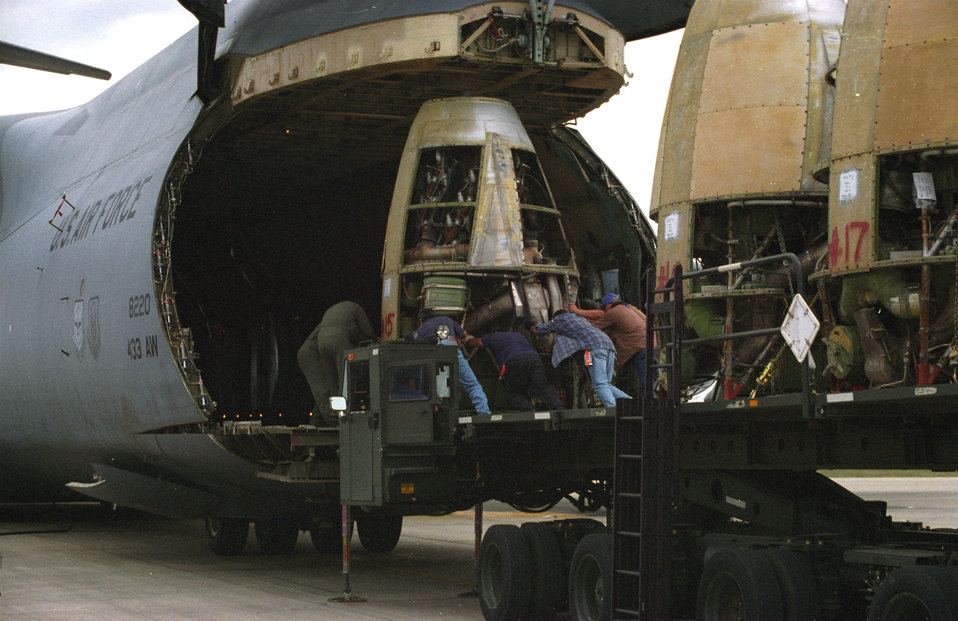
Museum move

LACKLAND AIR FORCE BASE, Texas -- Airmen from the 433rd Airlift Wing here load XC-99 engines onto a C-5 Galaxy before taking them to the Air Force Museum near Wright-Patterson Air Force Base, Ohio.